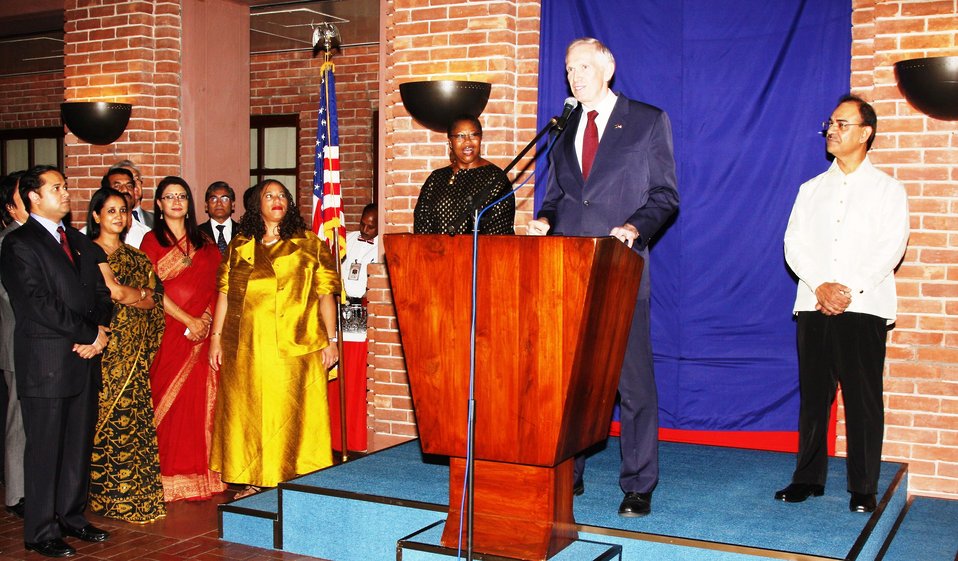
Ambassador Moriarty Delivers Remarks at U.S. Independence Day Celebration

U.S. Ambassador to Bangladesh James F. Moriarty delivers remarks at the Independence Day Reception at the U.S. Embassy Dhaka on June 8, 2010.